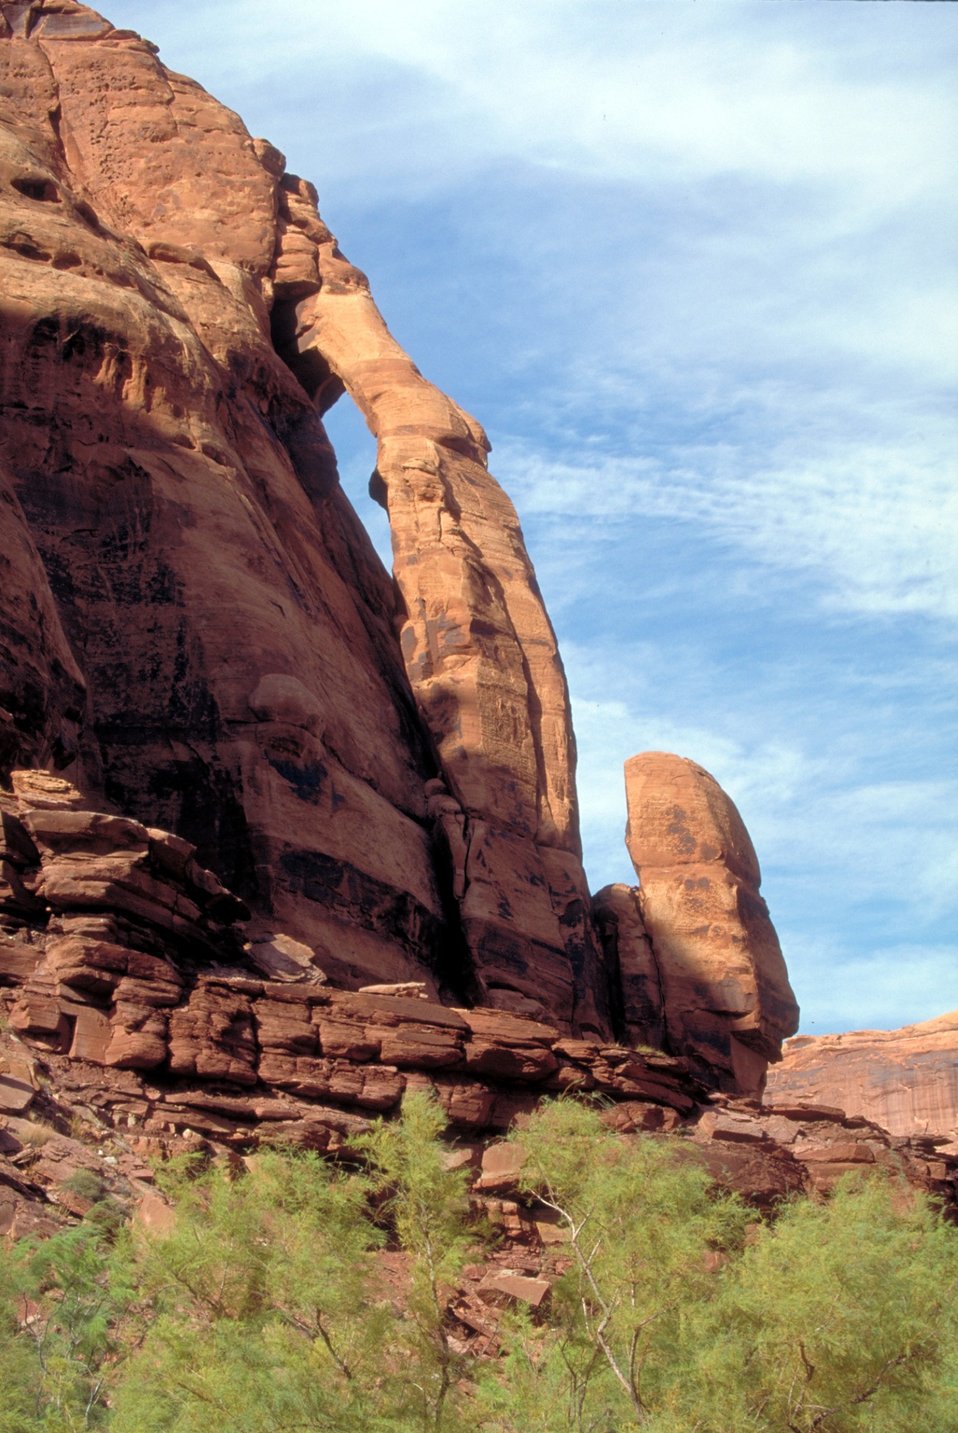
Jug Handle Arch along the Potash Road near Moab, Utah.